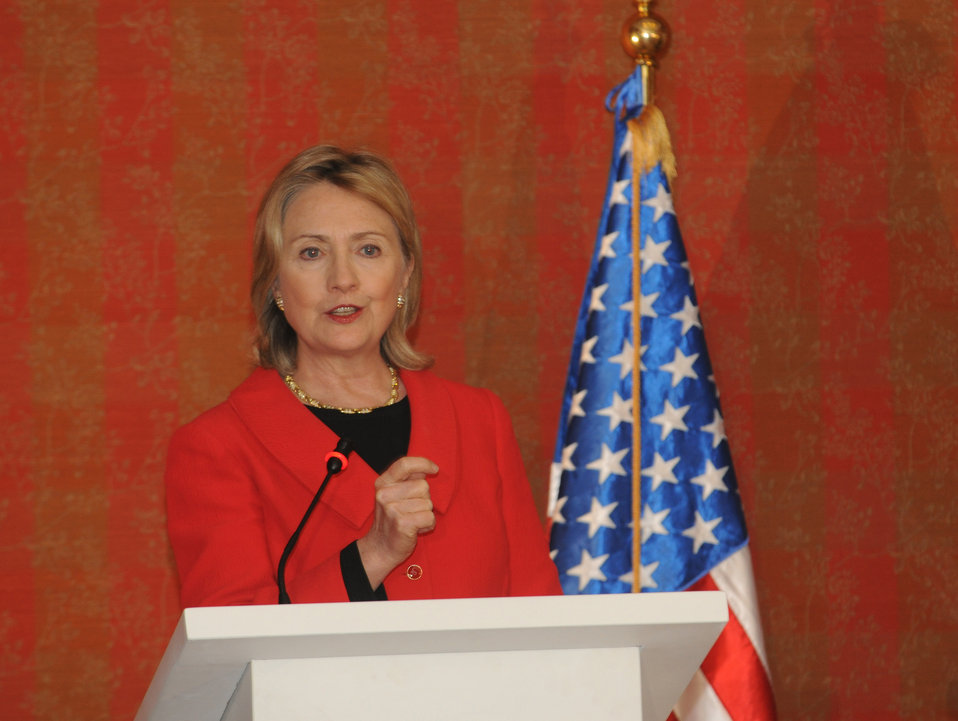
Secretary Clinton Speaks With Reporters

U.S. Secretary of State Hillary Rodham Clinton speaks with reporters during a joint press conference with Prime Minister Hamad bin Jassim bin Jaber al-Thani in Doha, Qatar, on January 12, 2010.